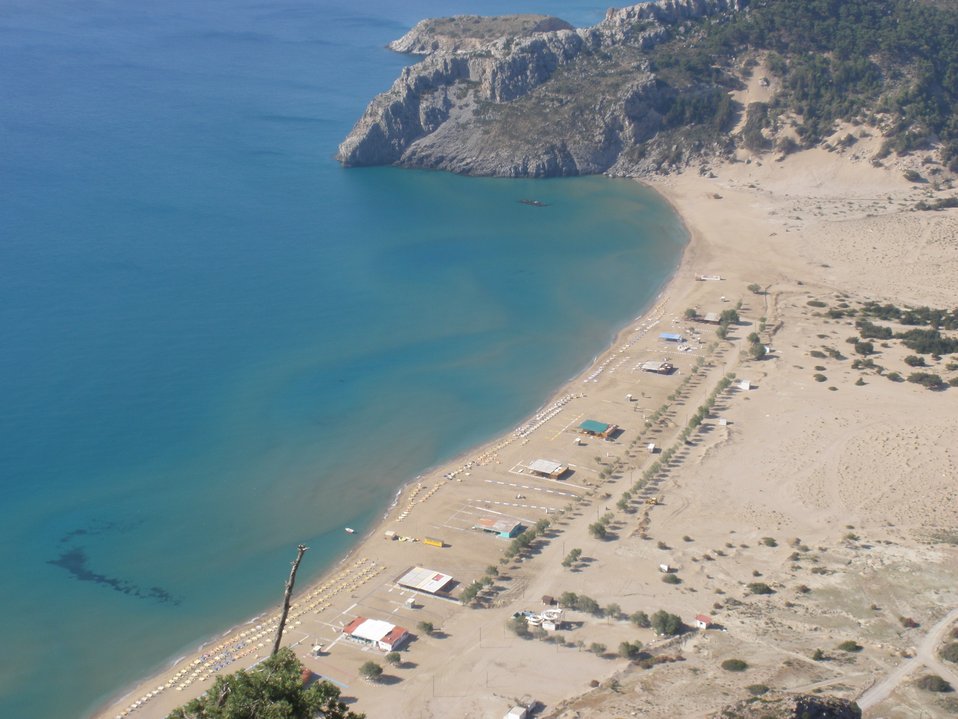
Ελληνικά: Παραλία Τσαμπίκα Tsambika beach, Rhodes